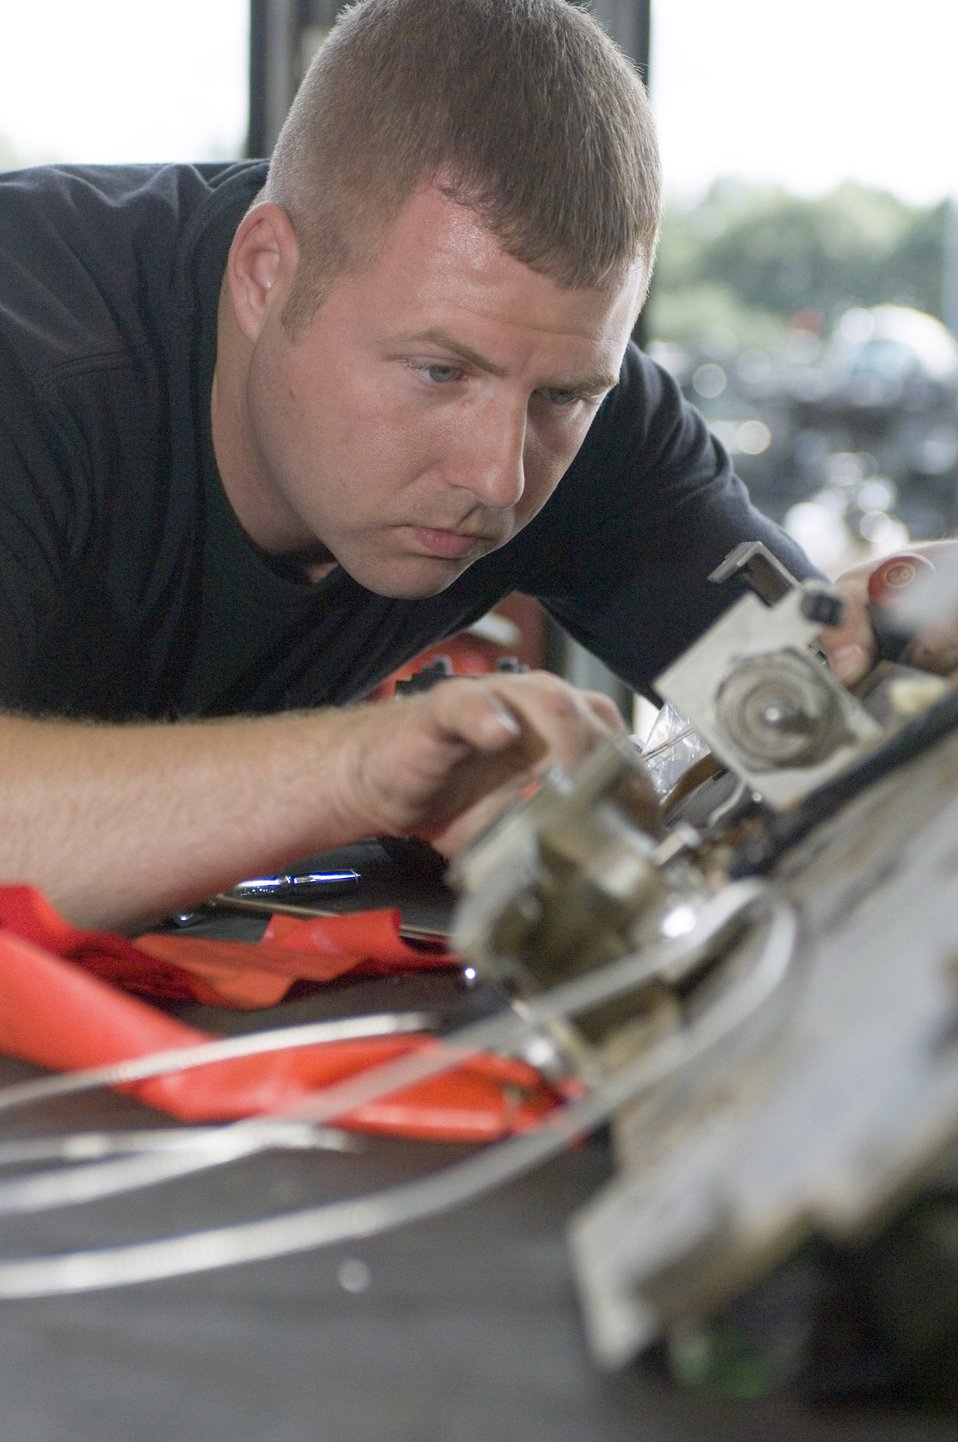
Sembach squadron maintains war reserves

Senior Airman Robert Langham overhauls a bomb rack Sept. 20 at Sembach Air Base, Germany, ensuring it's ready for immediate worldwide deployment. Airman Langham is an aircraft armament systems specialist with Sembach's 435th Materiel Maintenance Squadron.